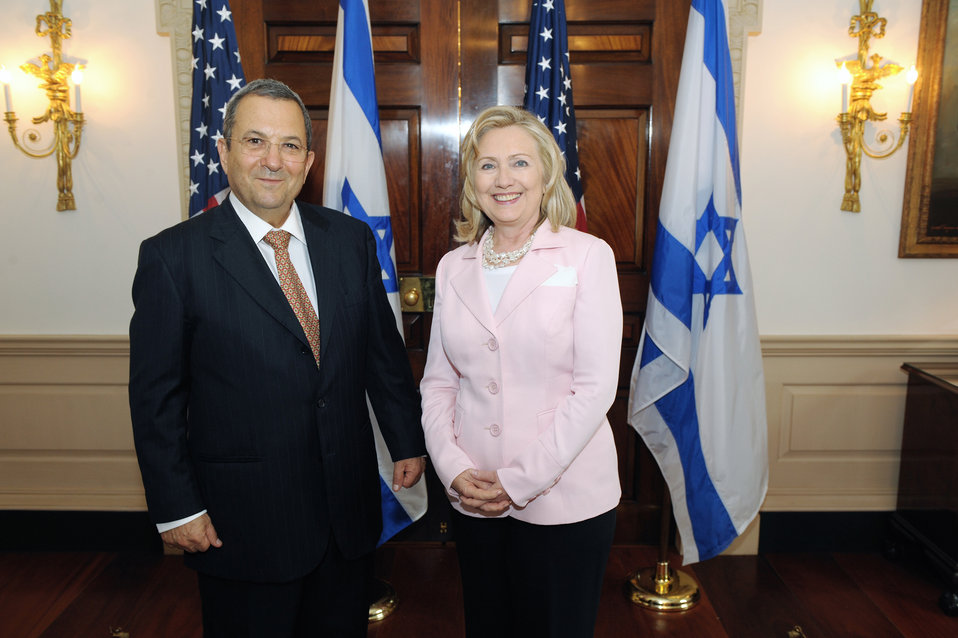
Secretary Clinton Meets With Israeli Defense Minister Barak

U.S. Secretary of State Hillary Rodham Clinton meets with Israeli Defense Minister Ehud Barak, at the U.S. Department of State in Washington, D.C., on July 28, 2011.